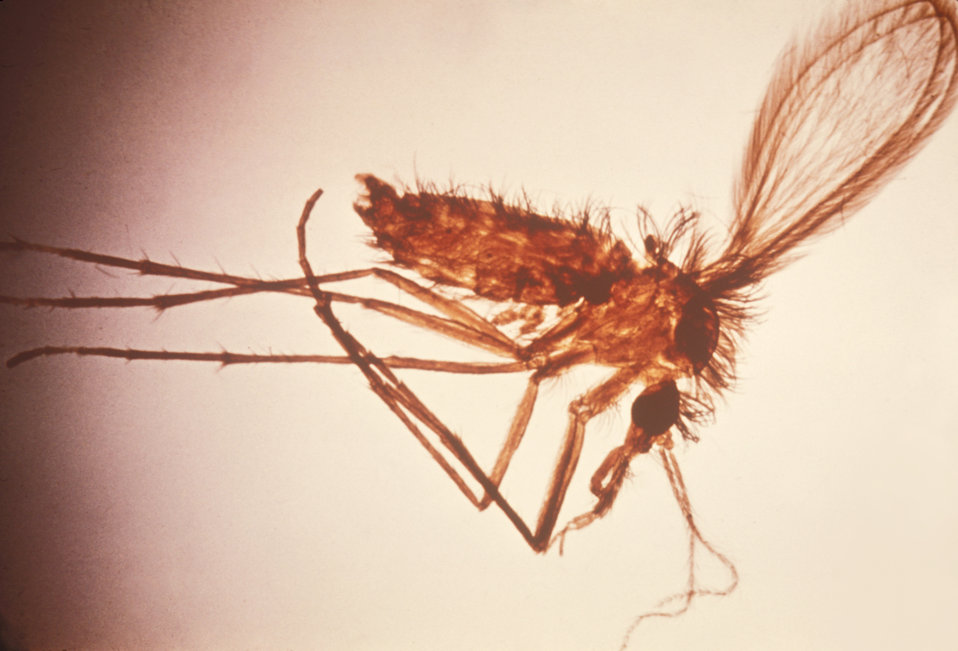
This is a female Phlebotomus sp. sand fly, a vector of the parasite responsible for Leishmaniasis.